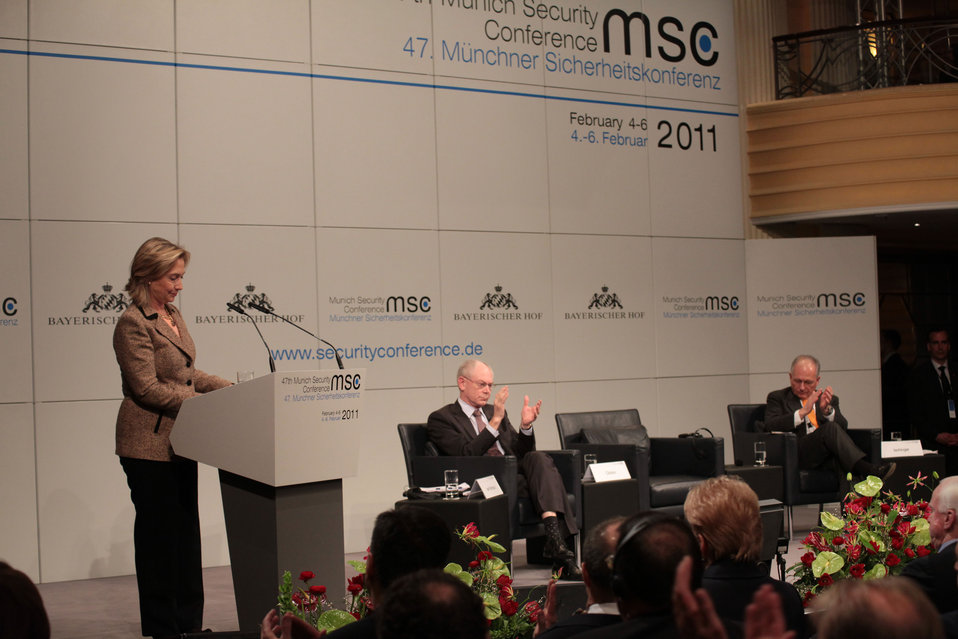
Secretary Clinton Prepares To Deliver Remarks

U.S. Secretary of State Hillary Rodham Clinton prepares to deliver remarks at the Munich Security Conference in Munich, Germany, on February 5, 2011.